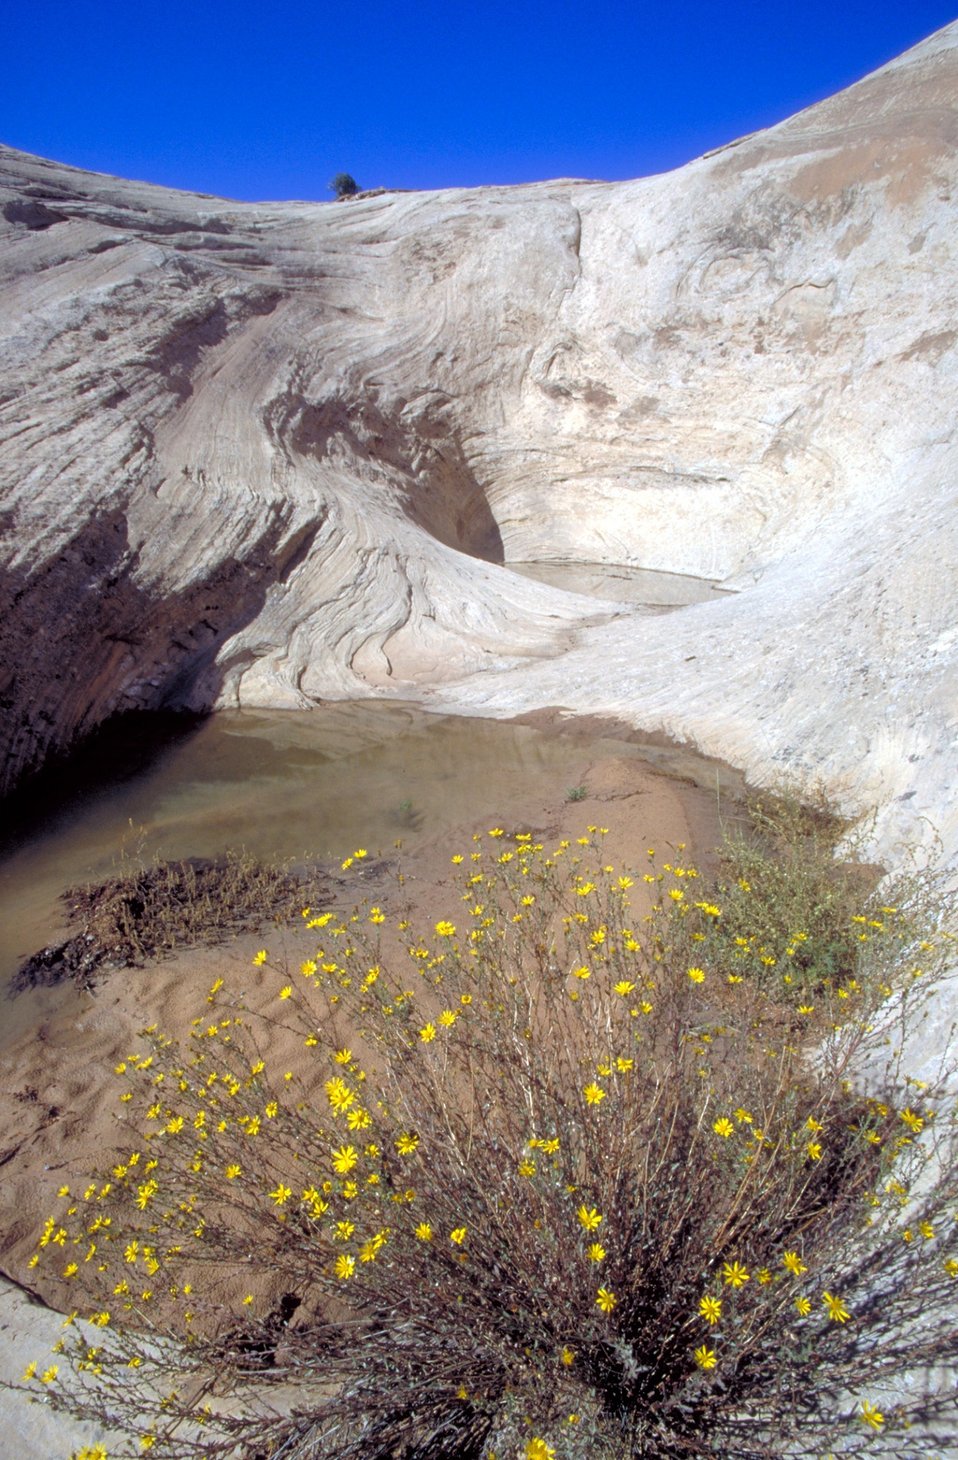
Slickrock and vegetation near head of Spring Canyon.